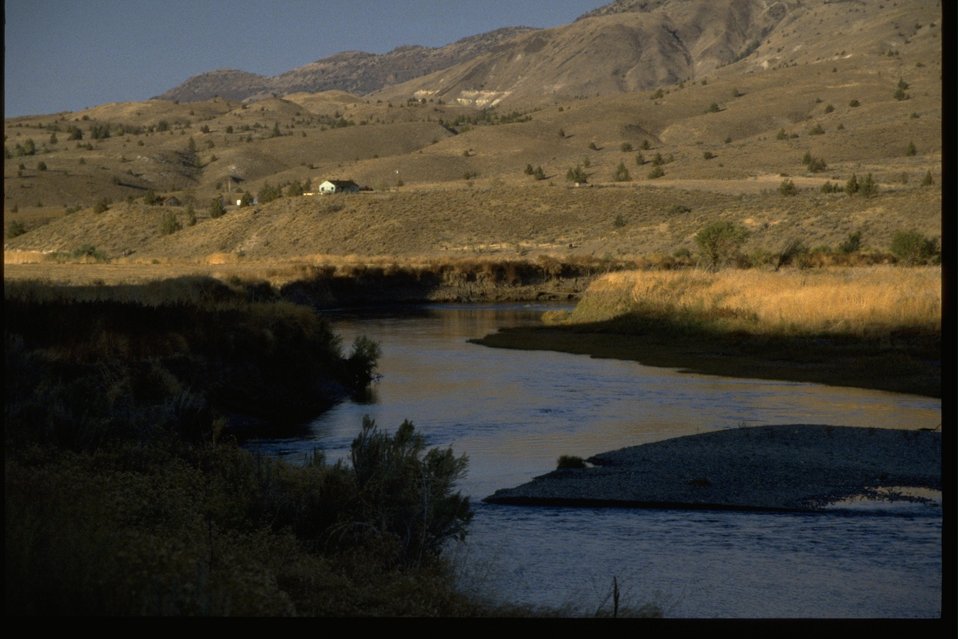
Private farm across the John Day River from BLM land.